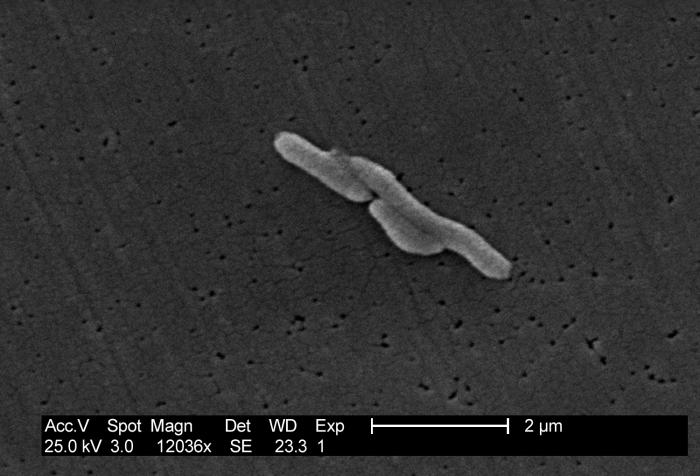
This scanning electron micrograph depicts three Gram-negative Flexispira rappini bacteria, magnified 12,036x.